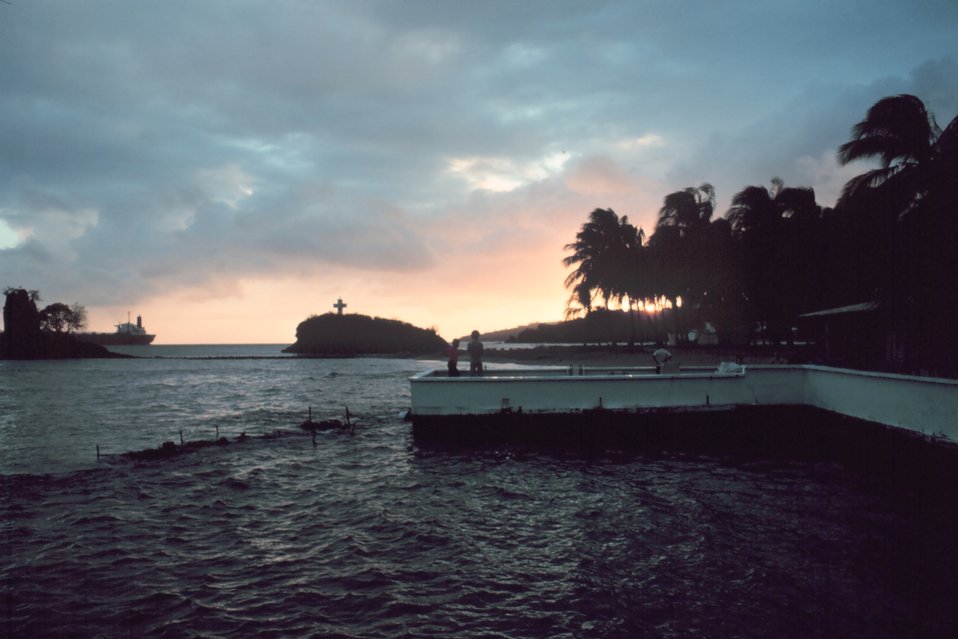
Trinidad sunset